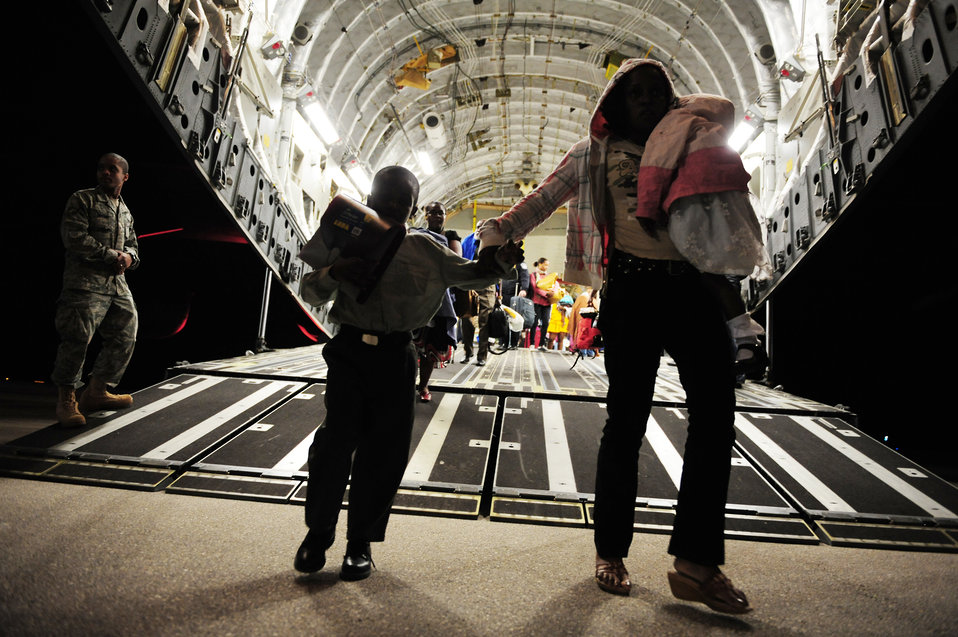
Haiti Earthquake Relief

Haitian-American evacuees exit a C-17 Globemaster III Jan. 18, 2010, at Orlando Sanford International Airport, Fla. The C-17 crew is assigned to the 729th Airlift Squadron at March Air Reserve Base, Calif. The aircraft is from the 452nd Air Mobility Wing at March ARB.